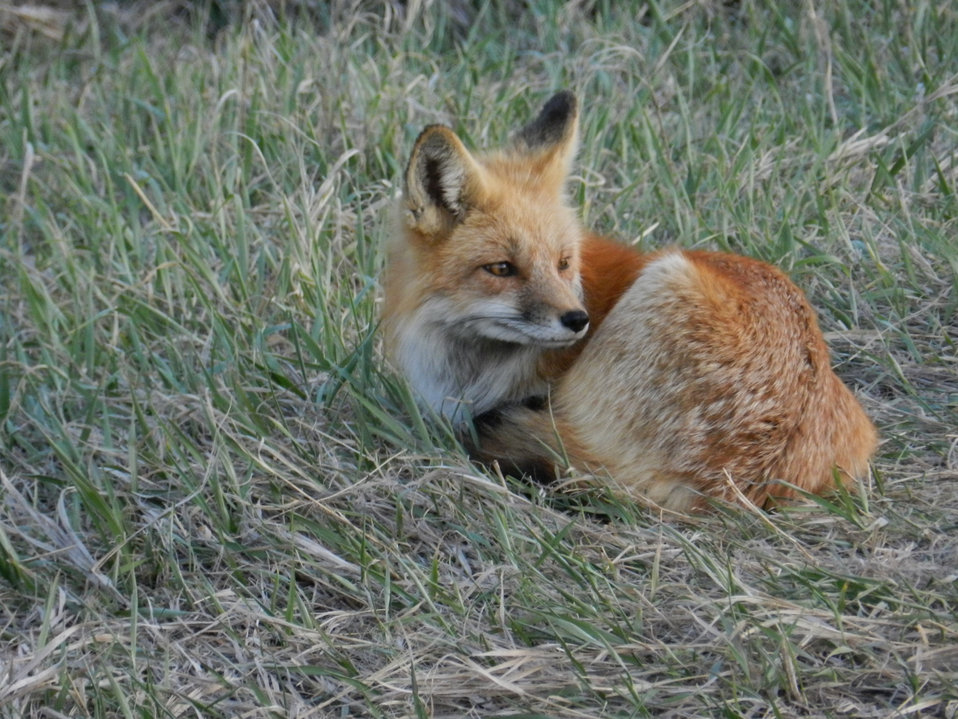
Red fox in urban open space, Fort Collins, CO.

Credit: Pedro 'Pete' Ramirez, Jr. / USFWS